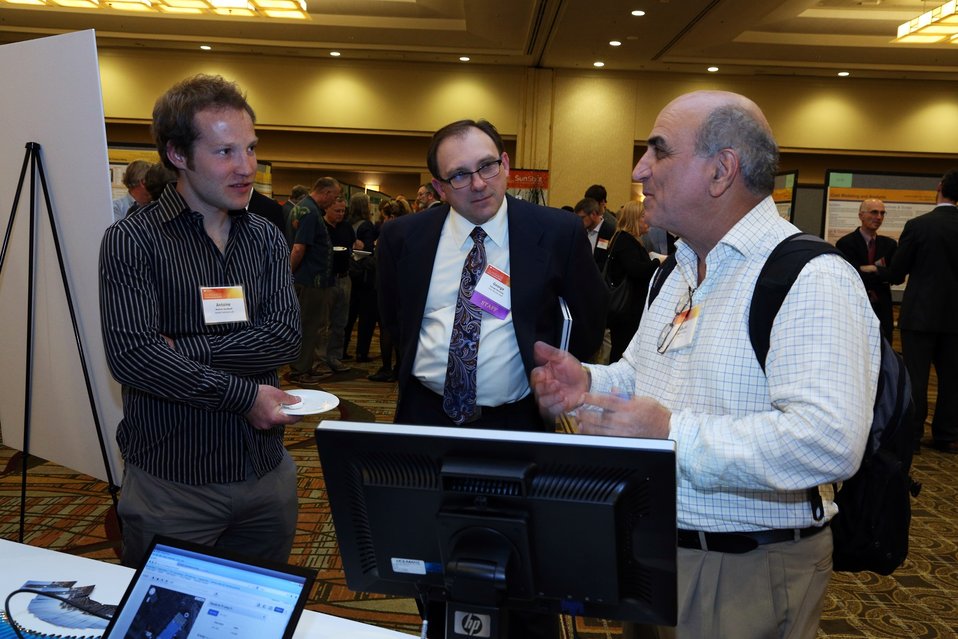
Tech Forum 15

Attendees and awardees connect at the Tech Forum.